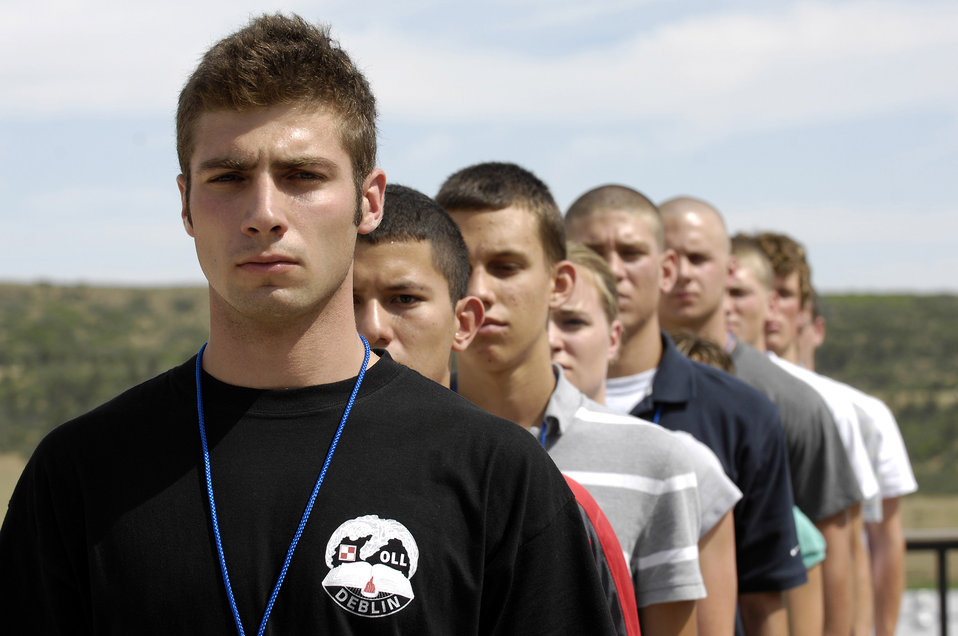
Class of 2012 arrives at Academy

Basic Cadet Maciej Krakowian stands at attention on the Terrazzo during inprocessing June 26 at the U.S. Air Force Academy, Colo. Inprocesing marks the start of 38 days of Basic Cadet Training, which is designed to prepare basic cadet trainees for entry into the cadet wing. Cadet Krakowian is an international cadet from Poland.